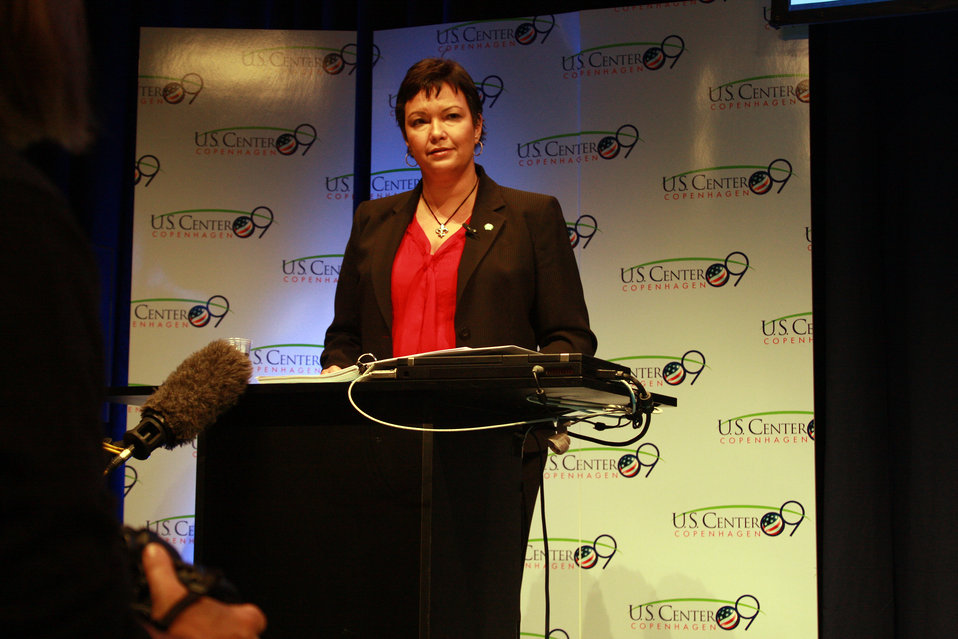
Remarks by U.S. Environmental Protection Agency Administrator

U.S. Environmental Protection Agency Administrator Lisa P. Jackson provides remarks at the U.S. Center at COP15 (Conference of the Parties to the UN Framework Convention on Climate Change) in Copenhagen, Denmark December 10, 2009.